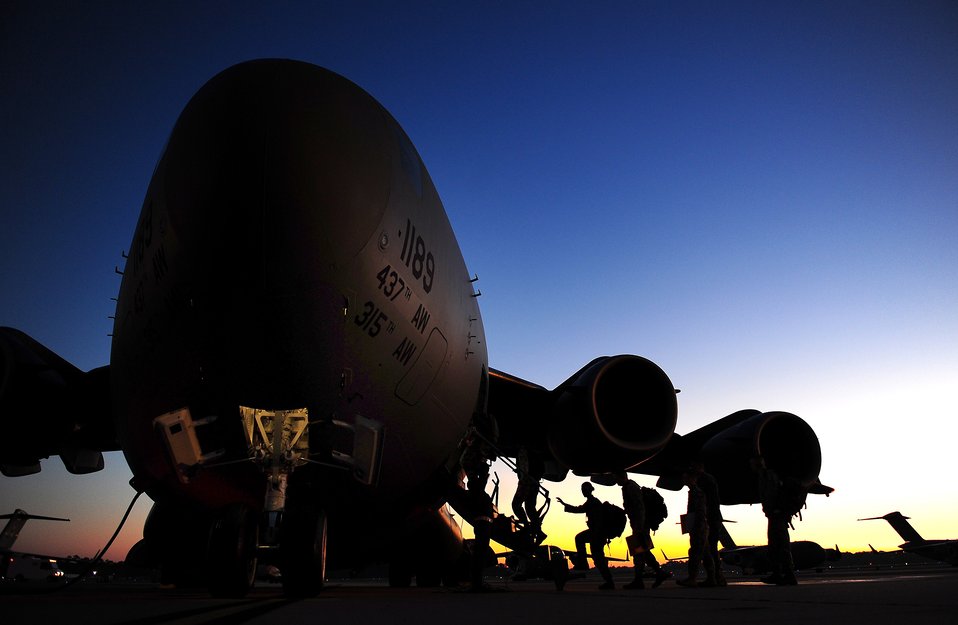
Load up

Airmen from the 437th Airlift Wing at Joint Base Charleston, S.C., work on a C-17 Globemaster III during an operational readiness evaluation Oct. 25, 2011, in Gulfport, Miss. The evaluation was intended to determine the wing members’ ability to fight and objectively measure mission effectiveness.